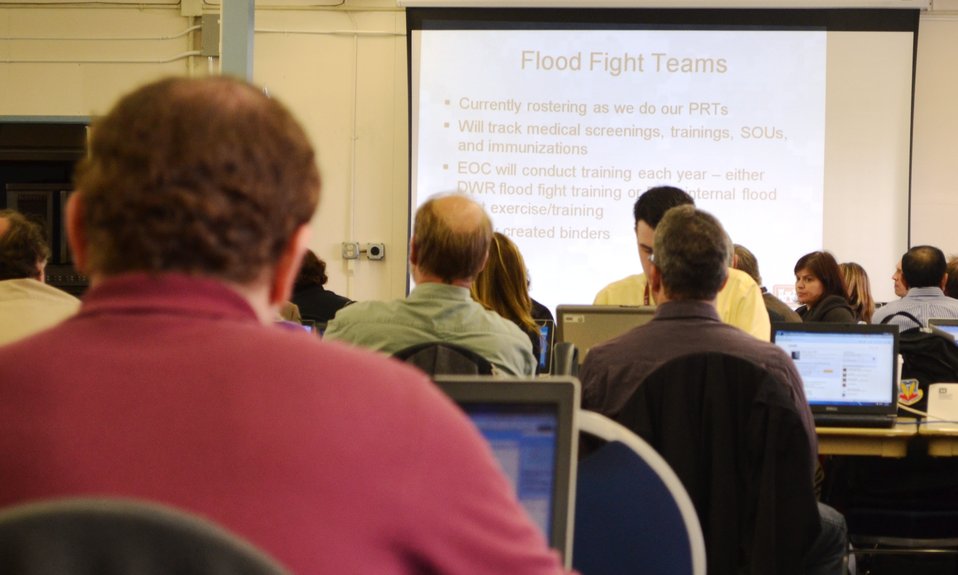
Corps conducts emergency operations training

Employees from the U.S. Army Corps of Engineers Sacramento District participate in a Continuity of Operations Planning exercise Feb. 5, 2013, near Sacramento, Calif. The exercise provided district employees an opportunity to evaluate and improve emergency response plans, and ensure the Corps can continue providing essential services to the public during a disaster. Each year, the Corps deploys hundreds of employees to respond to disasters around the world; sustaining lives with critical commodities; providing technical expertise; and assessing and restoring critical infrastructure.